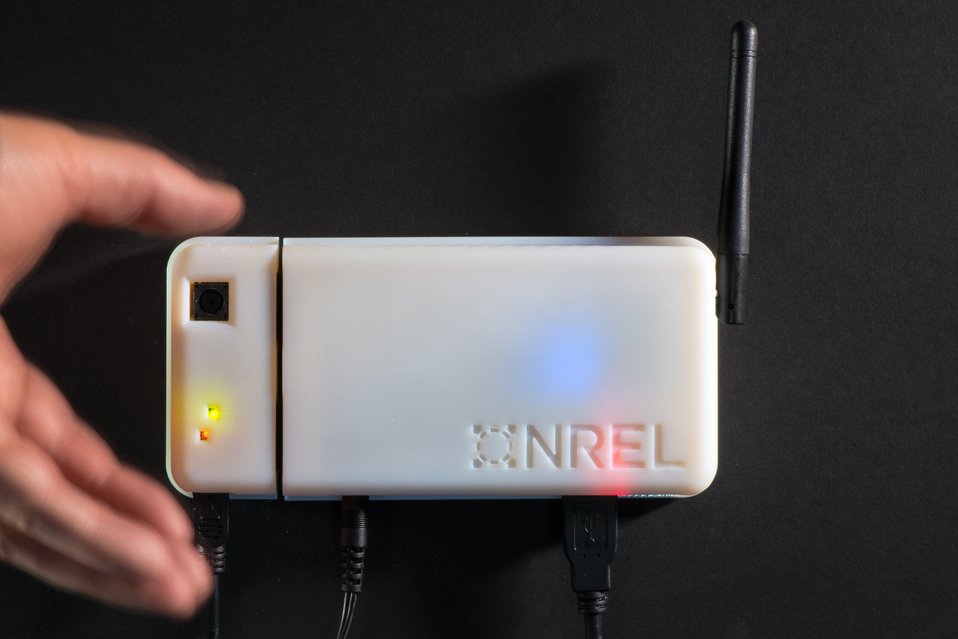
The Image Processing Occupancy Sensor (IPOS) at National Renewable Energy Laboratory.

The sensor is based on commercially available embedded hardware widely used by the smart phones industry, leverages mature open-source computer vision software libraries, and uses modern software engineering techniques and firmware development technologies. The IPOS used a synergistic approach with face and people detection through computer vision algorithms.